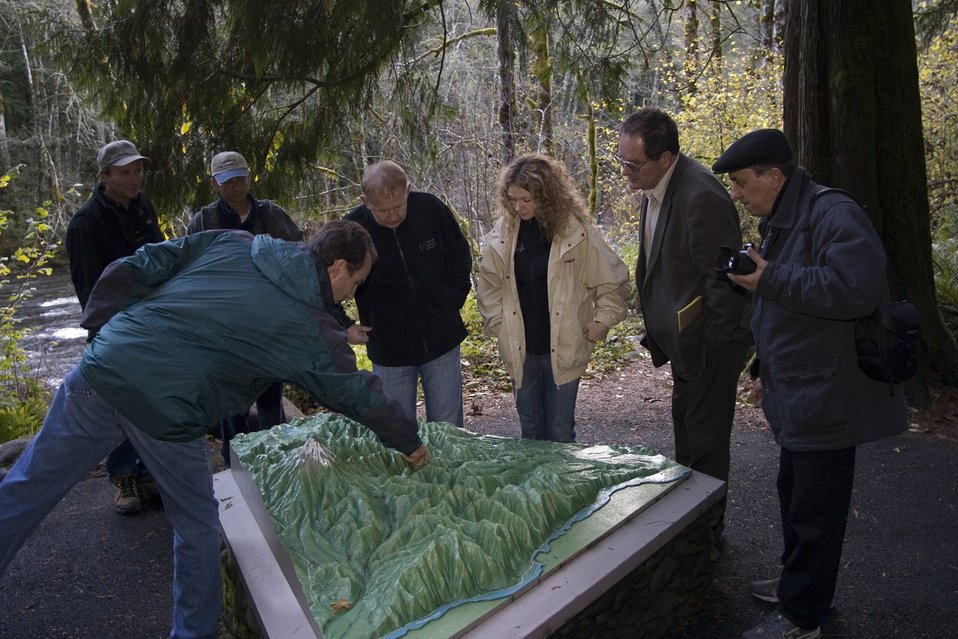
Dale Waddell, Executive Director of Wolftree and Joe Moreau, BLM Fish Biologist, look on as Forest Service's Dan Shively points out the location of the Wildwood Recreation Area on a 3-D model of the Mt. Hood watershed to Alexander Chistyakov, Vice-Governor of Kamchatka, Oksana Rudenko Kamchatka Regional Administrator, and Vyacheslav Zvyagintsev Wild Salmon Center Kamchatka Representative.